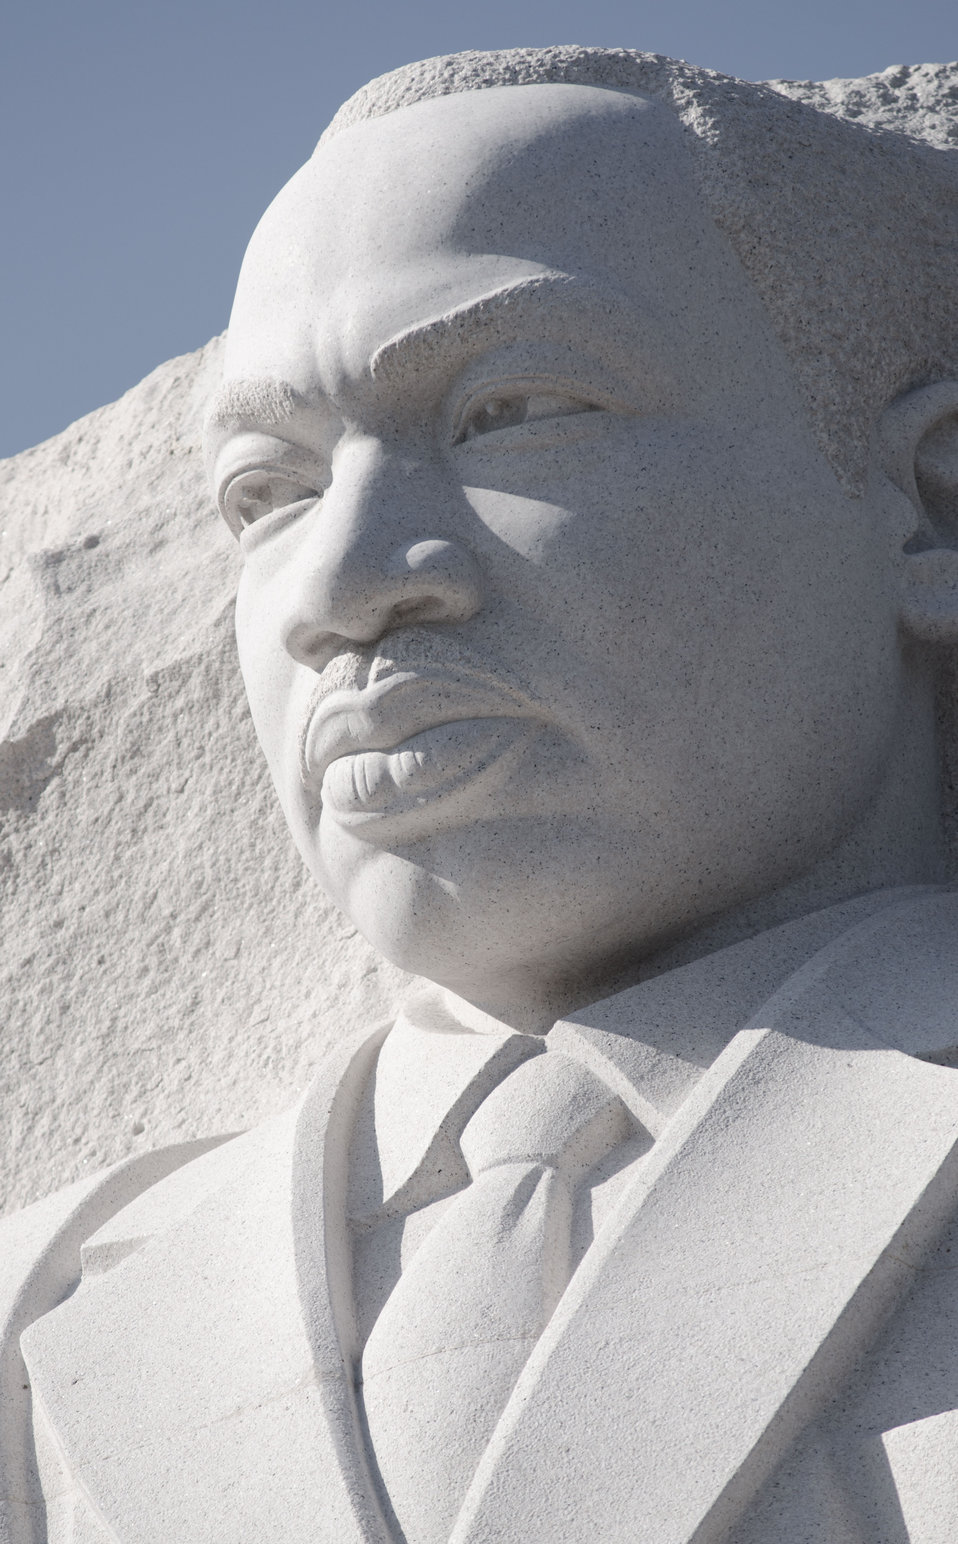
Martin Luther King, Jr. Memorial in Washington, DC, on Saturday, October 8, 2011.